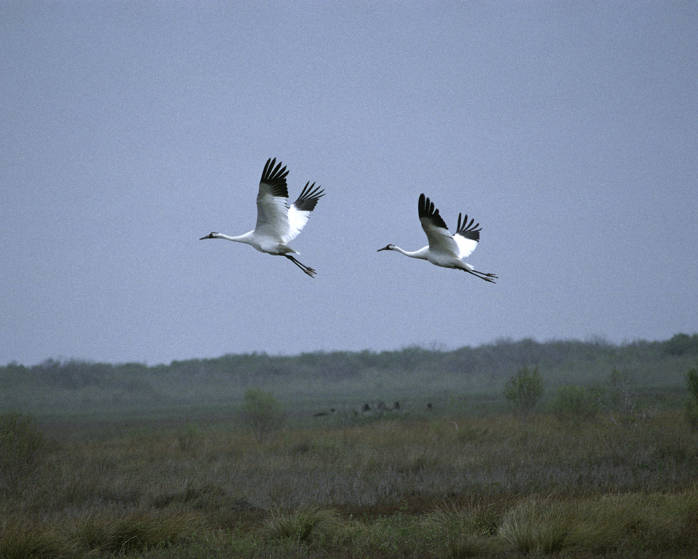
Whooping cranes

Aransas National Wildlife Refuge.